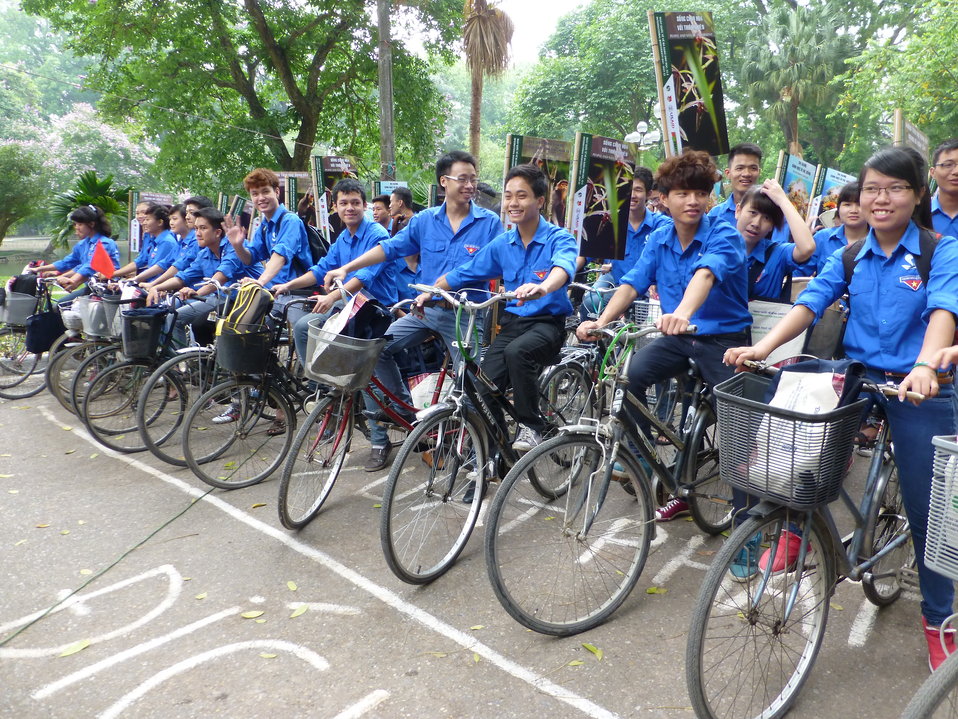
USAID Supports International Day for Biological Diversity in Hanoi